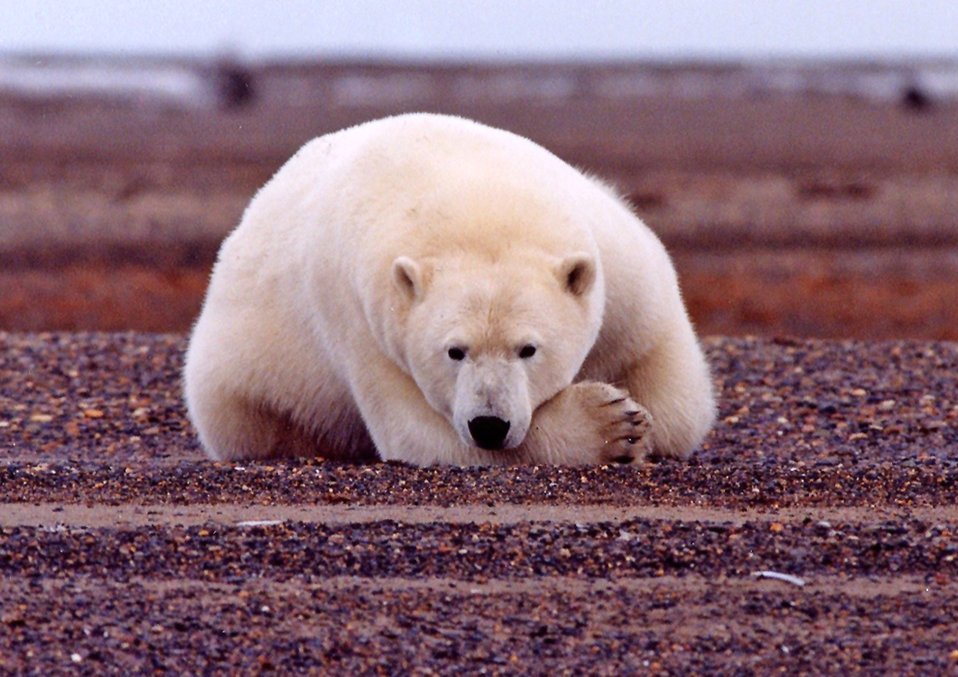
polar bear

endangered
Arctic National Wildlife Refuge, AK